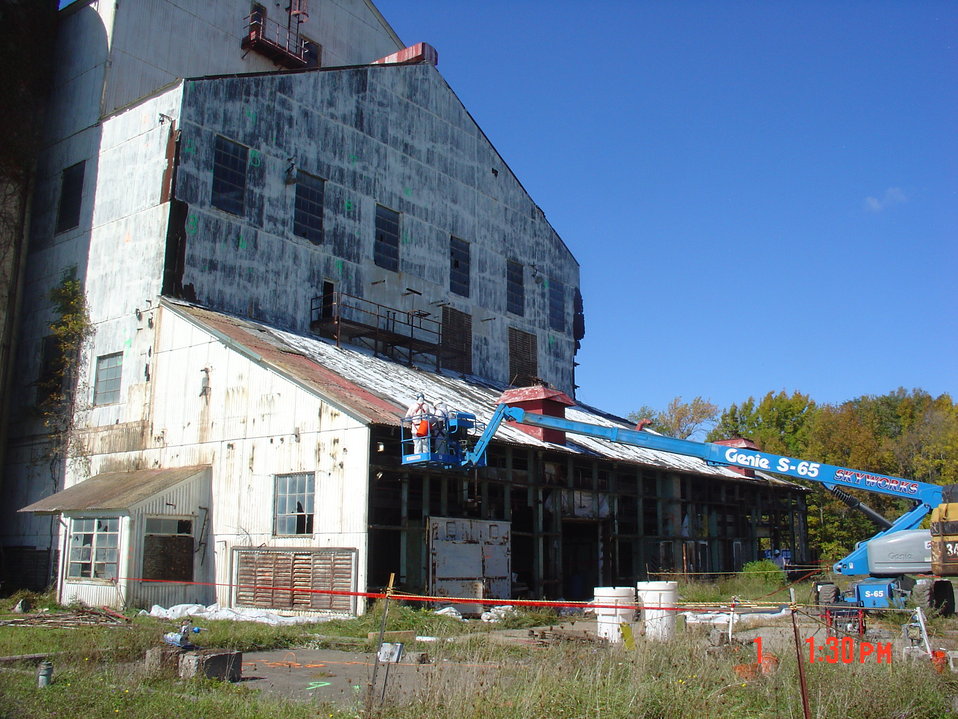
BLDG 401 ASBESTOS REMOVAL WORKER ON LIFT.

Activities from the Niagara Falls Storage Site, which is associated with the former Lake Ontario Ordnance Works. Formerly Utilized Sites Remedial Action Program (FUSRAP), a program initiated in 1974 to identify, investigate and clean up or control sites that were part of the Nation's early atomic energy and weapons program. Activities at the sites that are eligible for FUSRAP were conducted by Manhattan Engineer District (MED) or the Atomic Energy Commission (AEC), both predecessors of the Department of Energy (DOE). The U.S. Army Corps of Engineers was assigned management of FUSRAP by Congress in 1997.